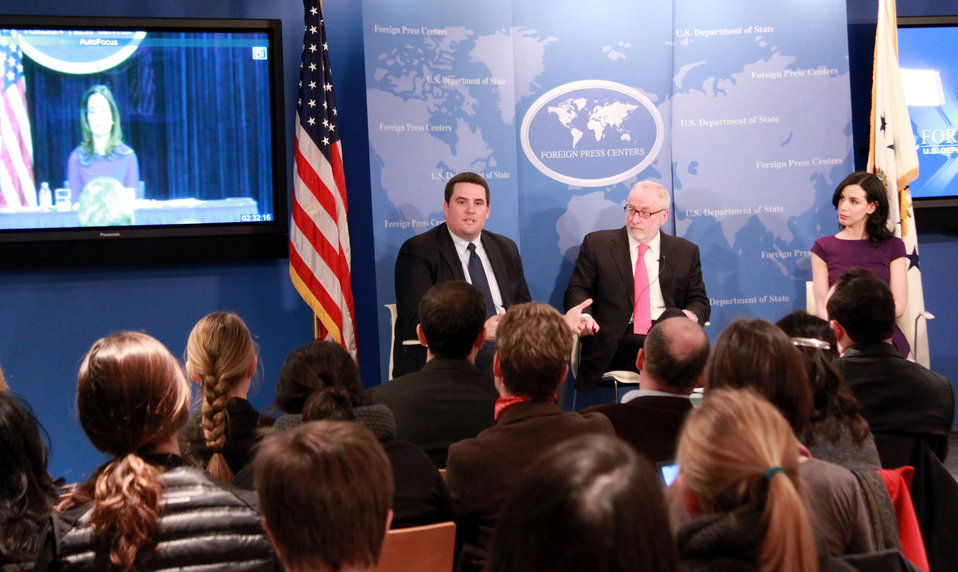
IIP Coordinator Phillips Responds to a Question

Coordinator of International Information Programs Macon Phillips, left, responds to a question during a panel discussion -- Digital Diplomacy: Making Foreign Policy Less Foreign -- with Assistant Secretary of State for Public Affairs Doug Frantz, center, and Assistant Secretary for Education and Cultural Affairs Evan Ryan, who joined via digital video conference, on February 18, 2014. Moderated by Emily Parker, author of Now I Know Who My Comrades Are: Voices From the Internet Underground and digital diplomacy advisor and senior fellow at the New America Foundation, the panel discussion is part of Social Media Week New York City.